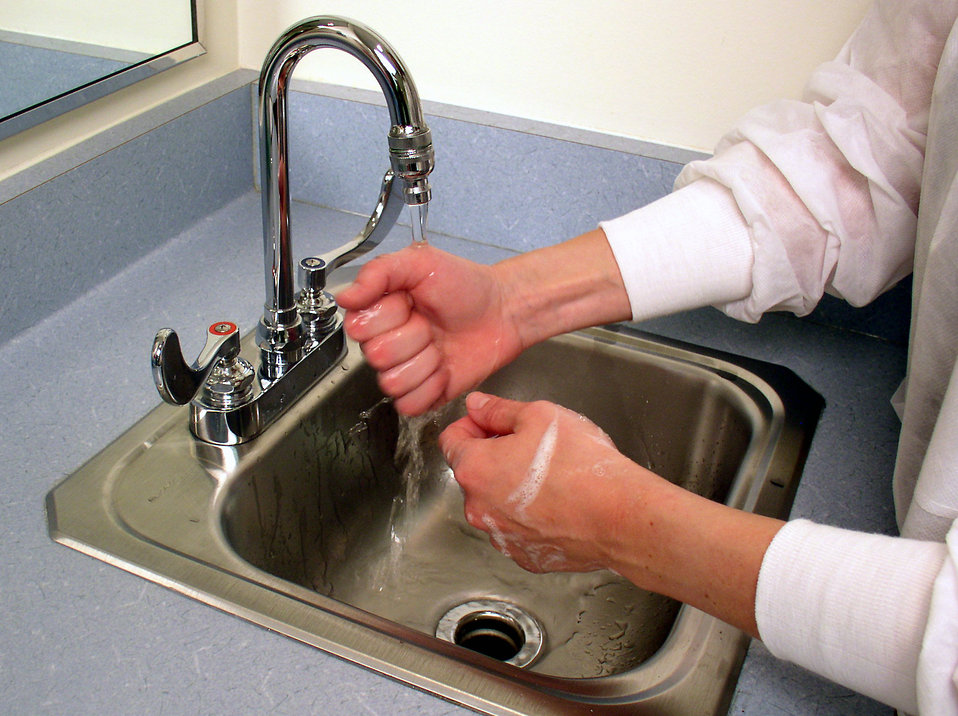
(Image 6 - Hand Washing Procedure) This laboratorian is shown rinsing soap from her hands with warm running water.